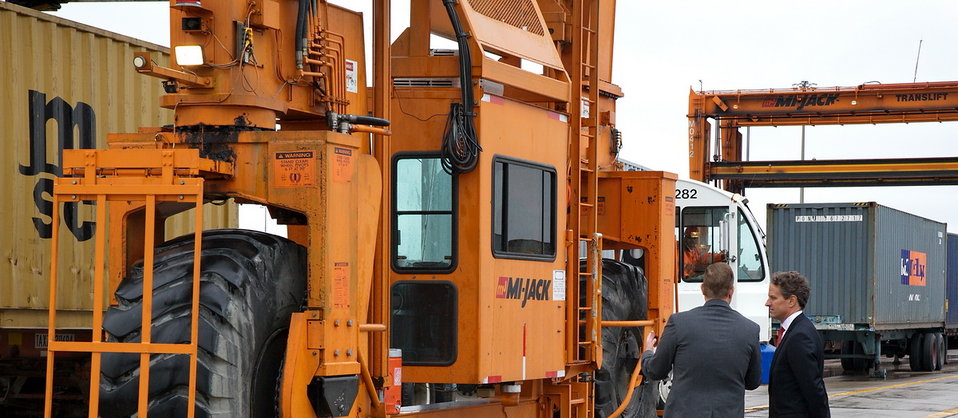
Secretary Geithner Visits BNSF Railway Dallas-Fort Worth, TX

To highlight the importance of domestic infrastructure development to the competitiveness of American businesses, Treasury Secretary Tim Geithner toured an intermodal facility owned by BNSF, one of the largest railroad networks in North America. BNSF is just one example of an American company that is investing in domestic infrastructure, creating jobs in the United States, and supporting the competitiveness of American businesses. But to be competitive in global economy, BNSF and other companies cannot go it alone. A modern transportation infrastructure network, supported by both public and private investment, is vital for the economy and job creation. To that end, the President’s FY2013 Budget includes common-sense proposals to revitalize American infrastructure by creating a 21st century transportation network that allows companies to ship their goods more efficiently throughout the country and the world.